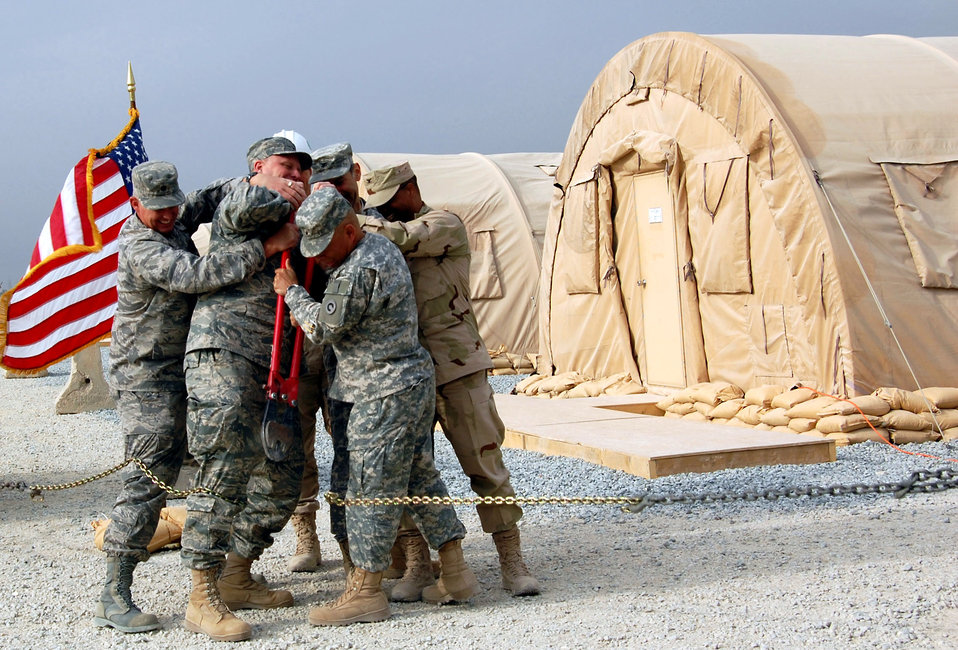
Downrange Air Force convoy support center opens

A group of commanders work together to cut a chain for the grand opening of the new convoy support center Nov. 24 in Southwest Asia. The new eight-tent center consolidates all of the Air Force convoy support functions into one area.